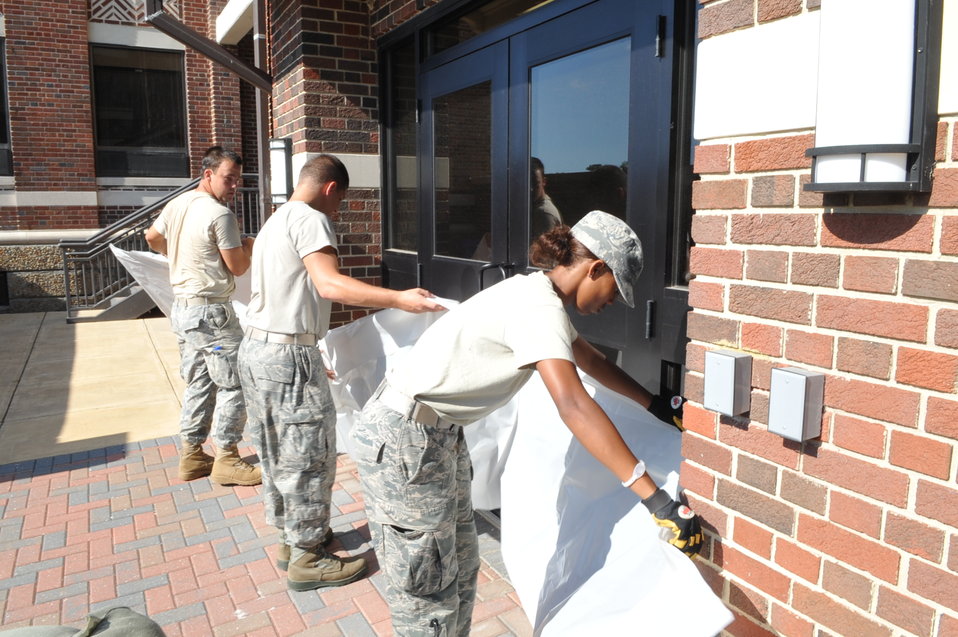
Preparing for the storm

Senior Airman Sally Kabugwa (right), Senior Airman Joshua Fogle and Airman 1st Class Justin Murphy prepare for Hurricane Irene by sandbagging the entrance to the Air Combat Command fitness center, Aug. 25, 2011, at Langley Air Force Base, Va. The Airman are power production and structure technicians from the 33rd Civil Engineer Squadron.